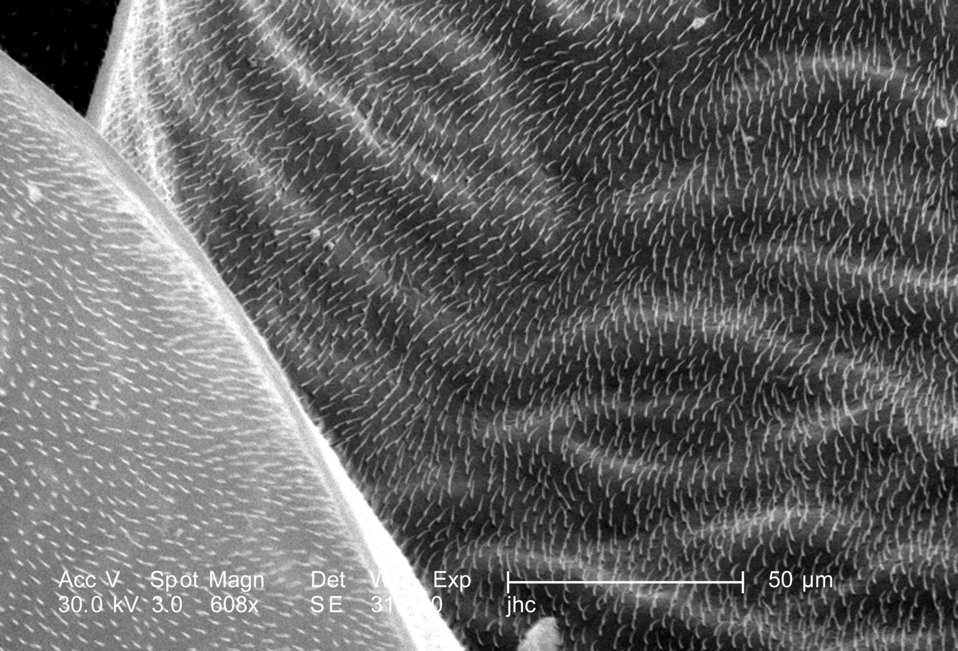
At a magnification of 608X, this scanning electron micrograph (SEM) depicted some of the morphologic details found on the wing surface of an unidentified 1/4"-sized black flying insect with a small red mark on its dorsum, discovered in the suburbs of Decatur, Georgia. As a member of the Phylum Arthropoda, i.e., Arthro = 'jointed', and poda 'leg', this insect sported three pairs of jointed legs, which placed it into the Family, Insecta>.